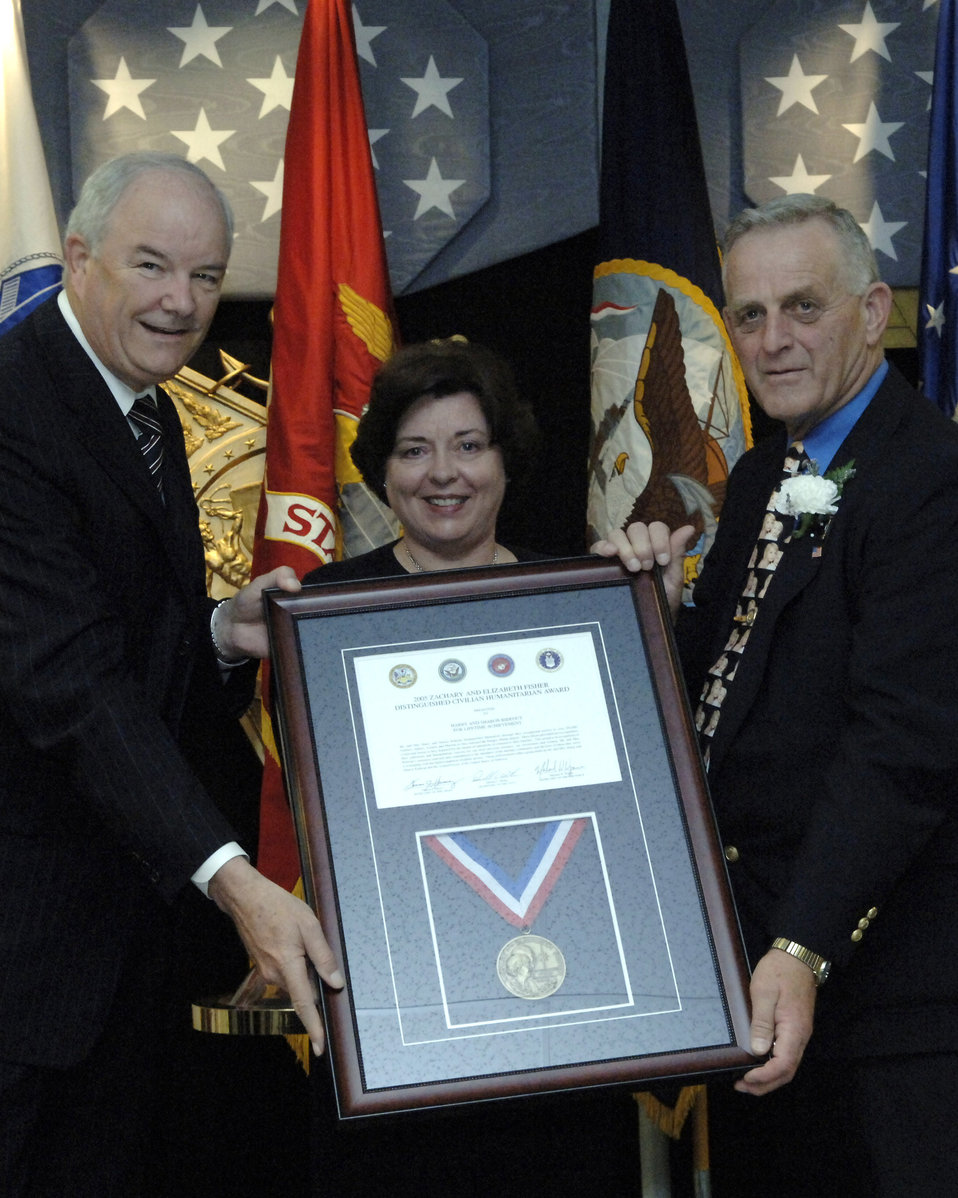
Couple honored with Fisher award

Secretary of the Air Force Michael W. Wynne presents Sharon and Harry Rideout with the 2006 Zachary and Elizabeth Fisher Distinguished Civilian Humanitarian Award Oct. 26 at the Pentagon. Among their many accomplishments to support servicemembers, the Rideouts created the Bangor Greeters Group at Bangor International Airport, Maine. The all-volunteer group greets Soldiers, Sailors, Airmen and Marines as they pass through the airport, either going to or returning from overseas deployments.